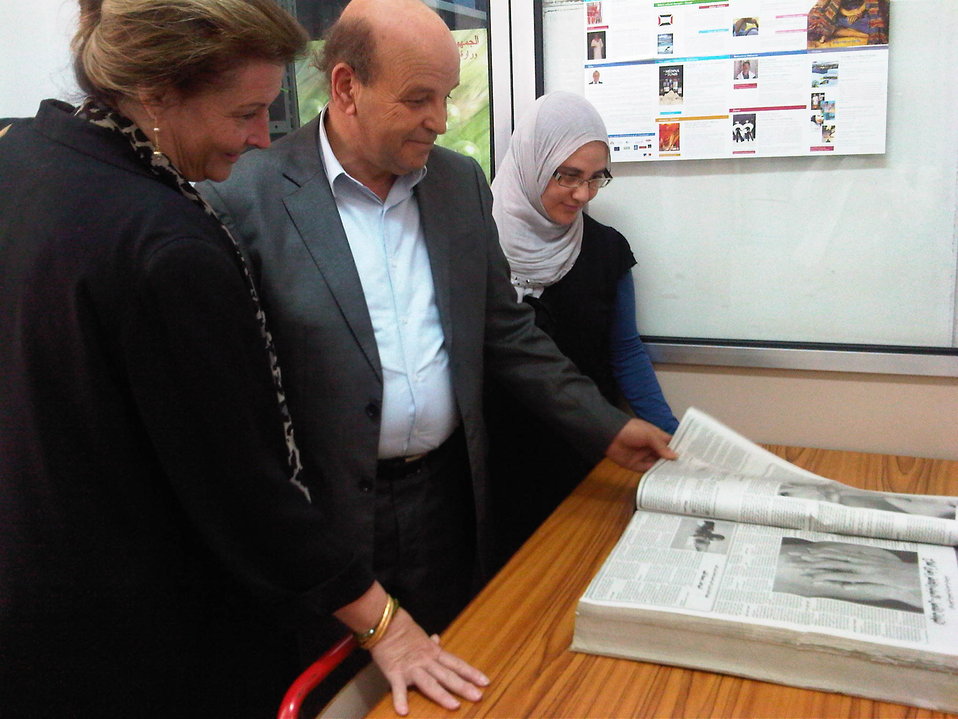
DAS Holtz Tours Tunisia's Main School of Journalism

Deputy Assistant Secretary of State for Public Diplomacy for Near Eastern Affairs Greta Holtz tours Tunisia's main school of journalism, Institut de Presse et des Sciences de l'Information (IPSI) with IPSI Director Mohamed Kembi in Tunis, Tunisia, on May 27, 2011.